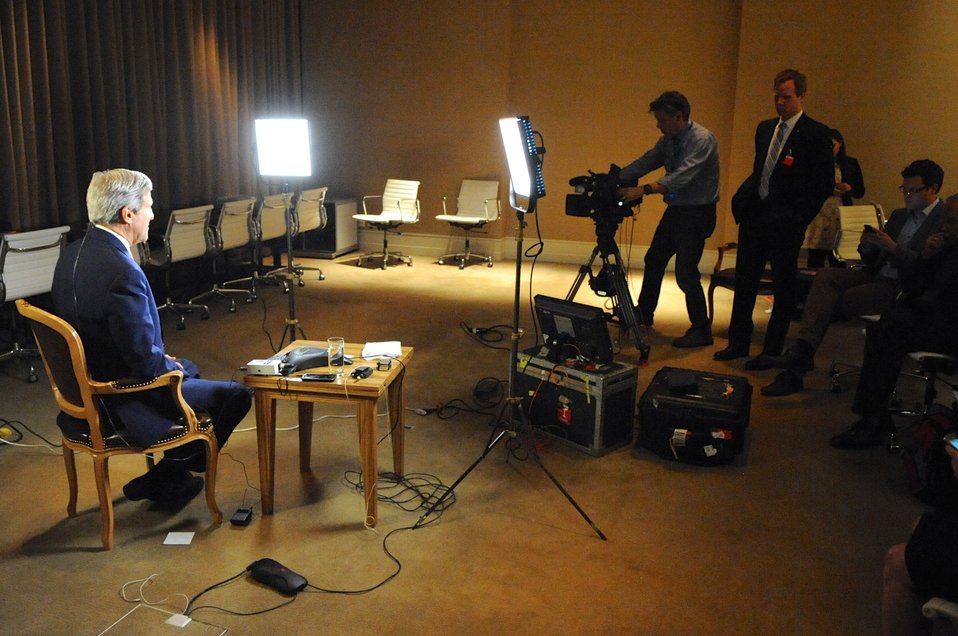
Secretary Kerry Makes an Appearance on NBC's 'Meet the Press'

U.S. Secretary of State John Kerry prepares to be interviewed by David Gregory, host of the NBC News program, 'Meet the Press,' after he and fellow representatives of the P5 1 nations concluded talks in Geneva, Switzerland, on November 10, 2013, that focused on Iran's nuclear capabilities.